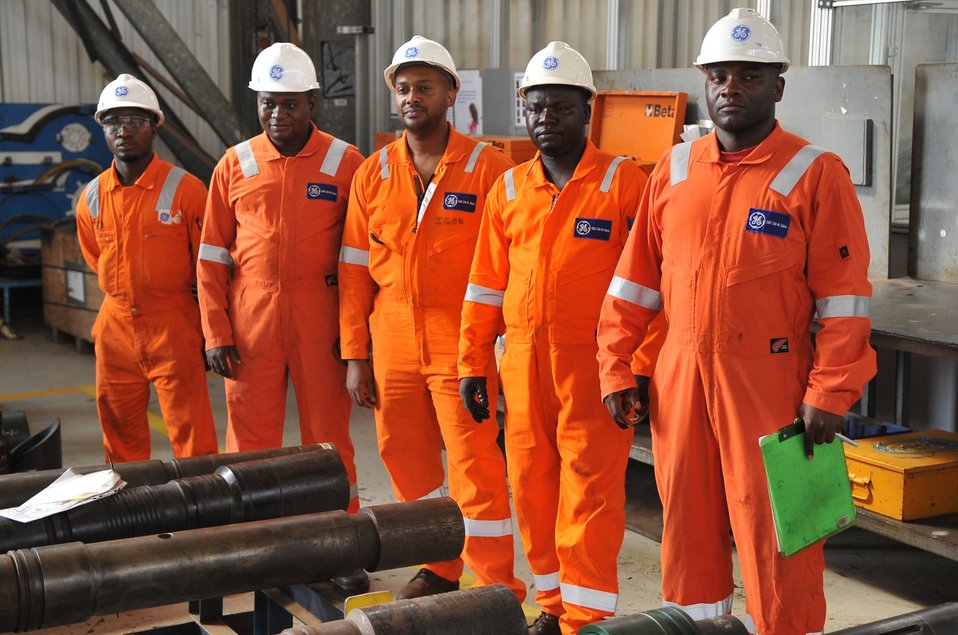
GE Workers Watch As Secretary Kerry Tours Their Plant in Port of Luanda

Workers at the General Electric Oil Services facility watch as U.S. Secretary of State John Kerry tours the Sonils oil services compound in the Port of Luanda on May 4, 2014.